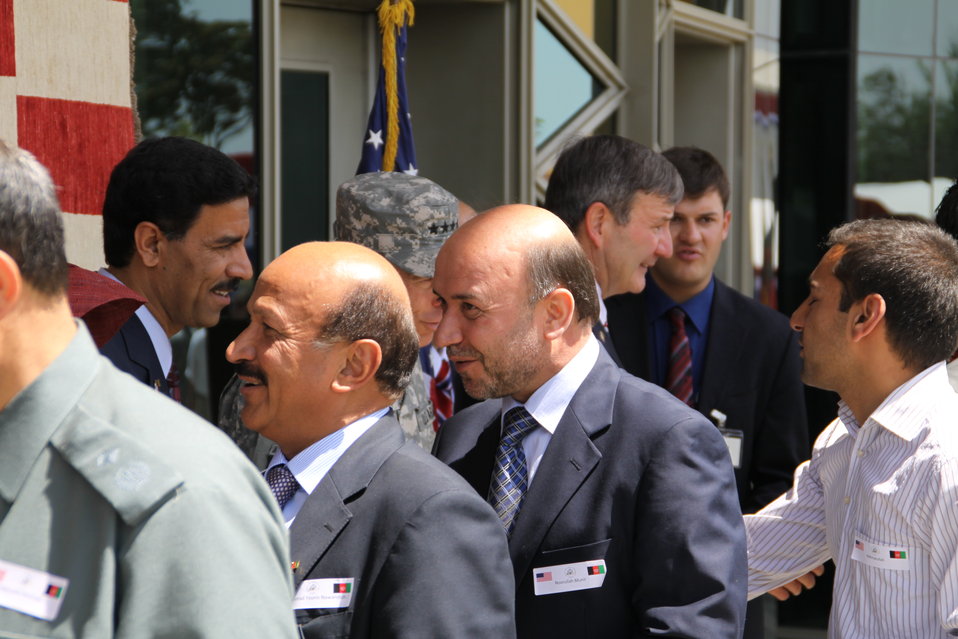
Kabul Official July 4th Celebration